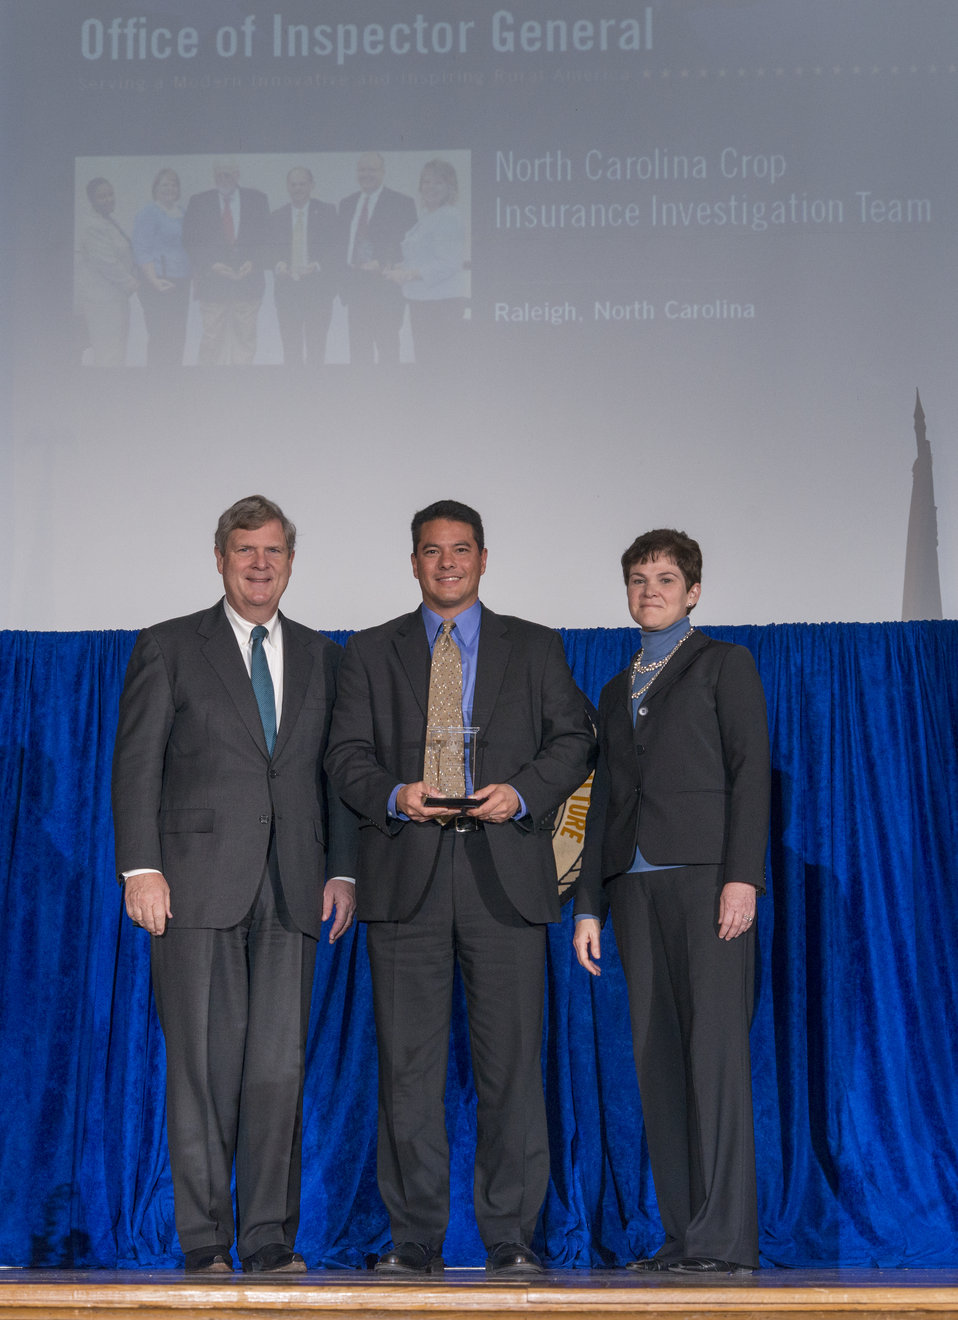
Agriculture Secretary Tom Vilsack and Agriculture Deputy Secretary Krysta Harden present the Secretary’s Honor Award to North Carolina Crop Insurance Investigative Team, Office of Inspector General, in Raleigh, NC Group leader Bradford J. Smallwood for tireless dedication during a collaborative investigative effort to stop the largest crop insurance fraud scheme uncovered in the country at the 2013 Secretary's Honor Awards in the Jefferson Auditorium at the U.S. Department of Agriculture (USDA) in Washington, D.C. on Wednesday, Dec. 11, 2013.